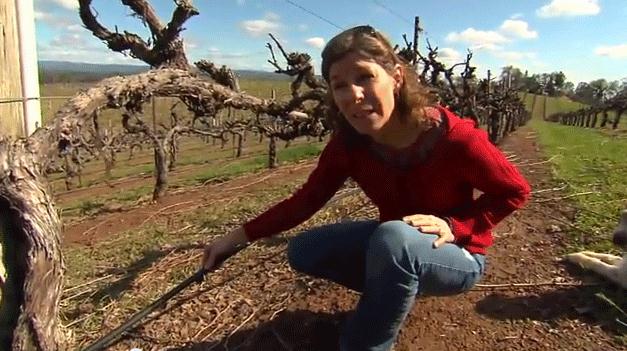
TAL1

Ann Johnson grows grapes for wine in El Dorado County, CA where she demonstrates how a drip irrigation system reduces the water used on her farm. Her story and the stories of other California farmers and ranchers are featured in a public television series, “This American Land,” this fall.